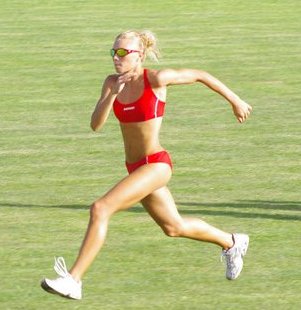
Director Dariya Derkach training in Pagani in 2011